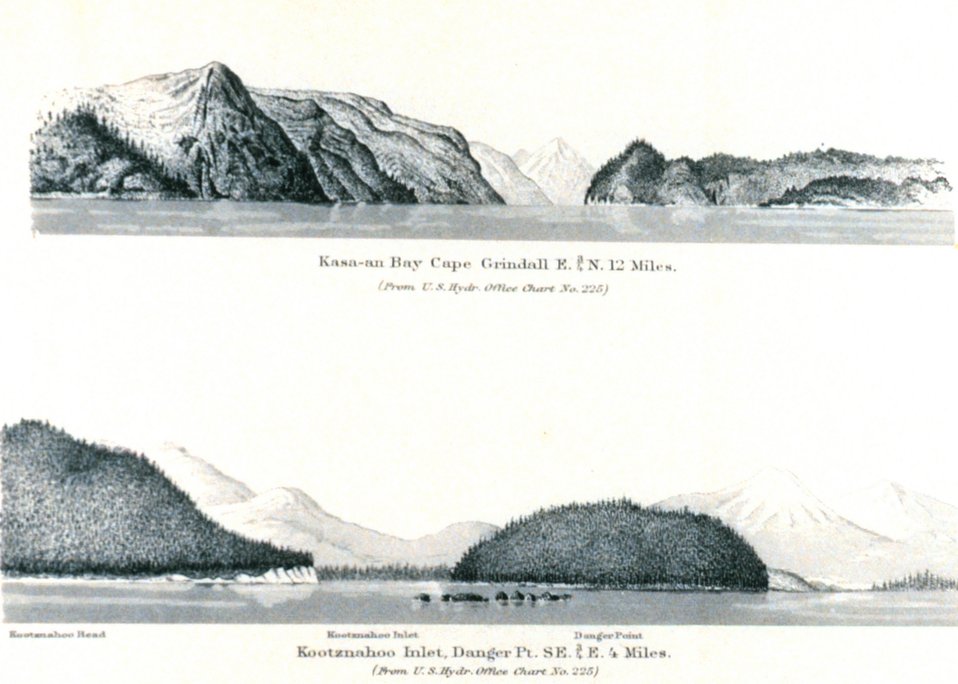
Kasa-an Bay. Kootnahoo Inlet. In: Pacific Coast Pilot Alaska Part I 1883. P. 166. Library call number VK943 .N3 1883.